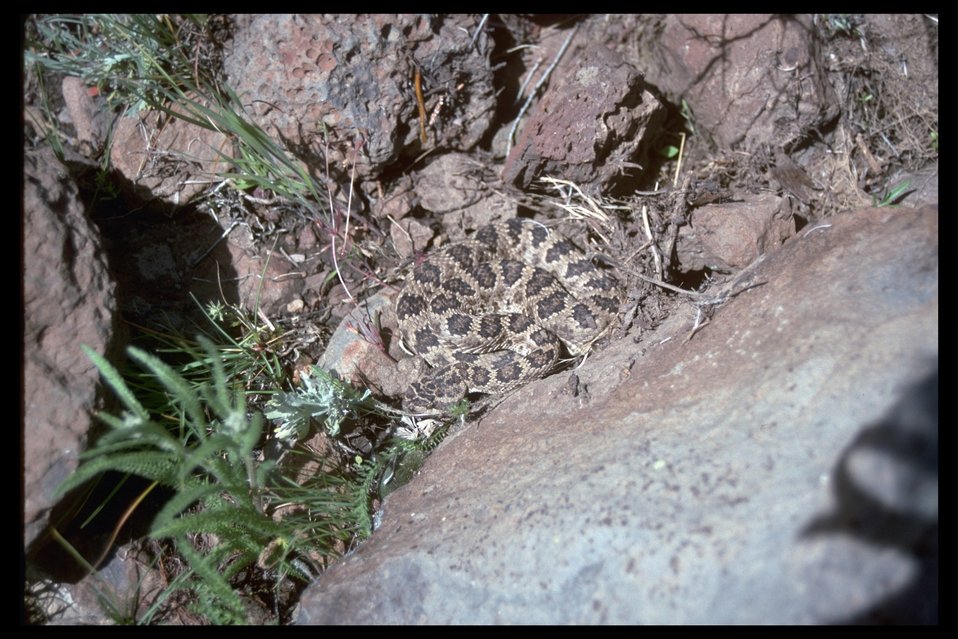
A rattlesnake sunning in the stonehouse WSA. (WSA 2-23L)